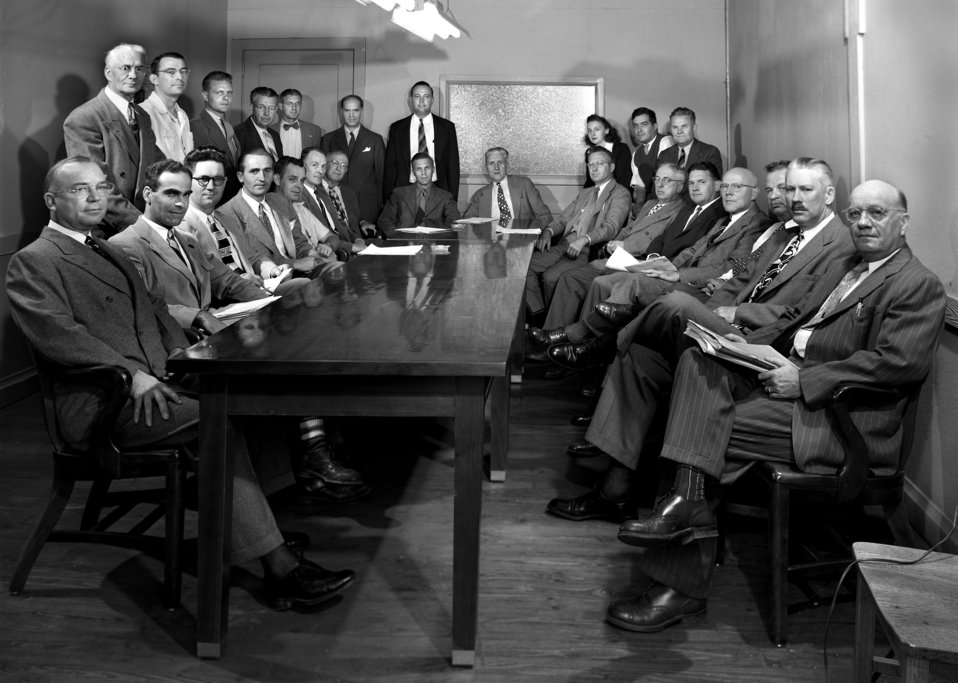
Roane - Anderson Staff Group Oak Ridge 1948

5245-3 DOE photo Ed Westcott 9-28-1948 Oak Ridge Tennessee